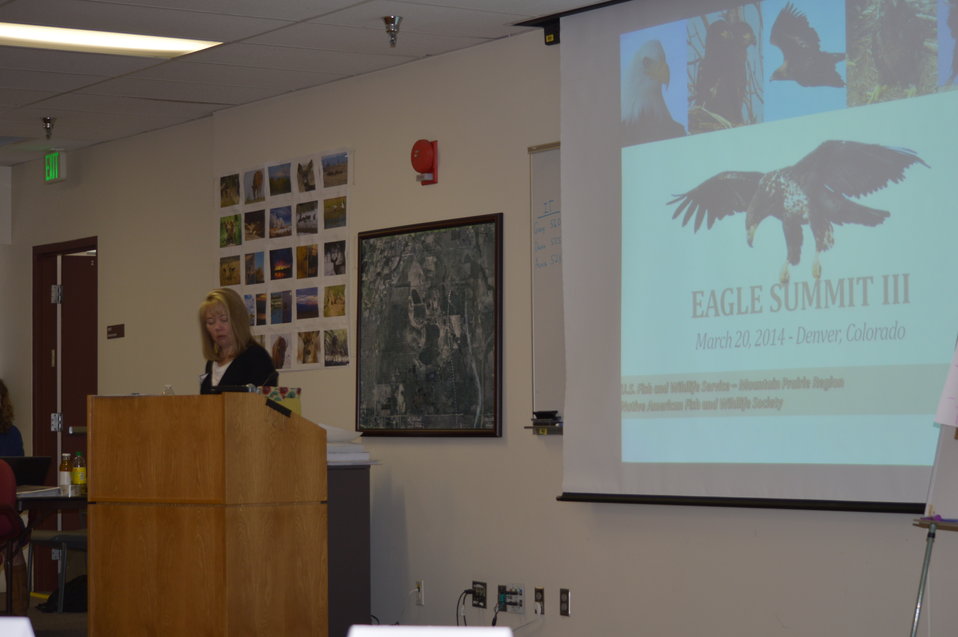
Eagle Summit III in Denver, Colorado on March 20, 2014 at the Rocky Mountain Arsenal National Wildlife Refuge.